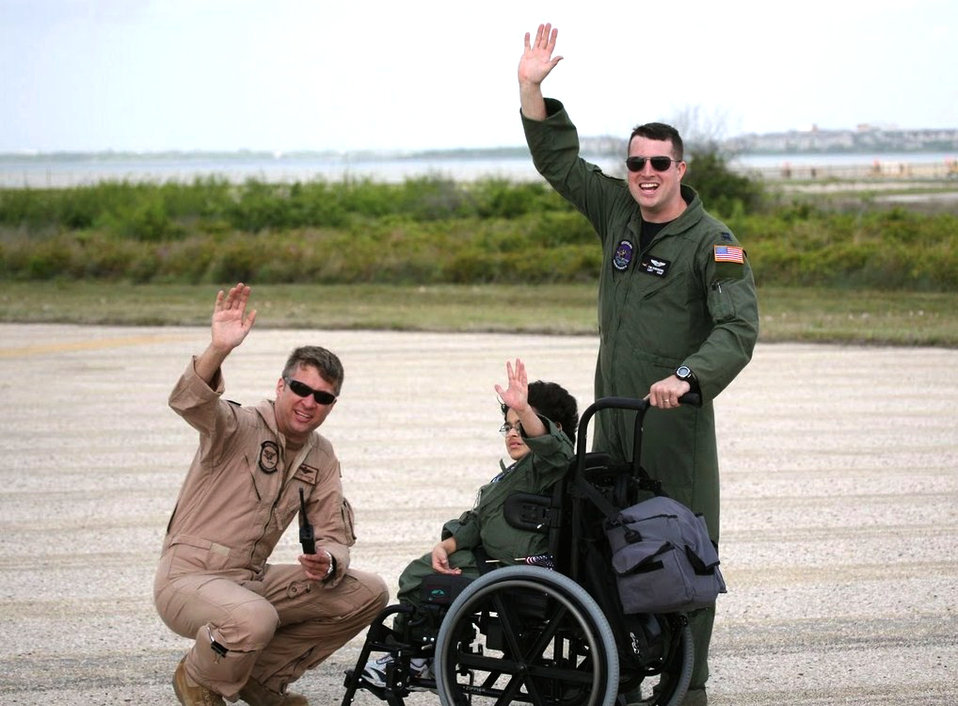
Pilot for a Day at Barksdale AFB

Navy Lt. Josh Lostetter, Pilot for a Day Eric Davis and Capt. Tim Robinson wave at a passing B-52 Stratofortress as it flies over the runway May 1, 2010, at Naval Air Station Corpus Christi, Texas. When scheduling allows, 2nd Bomb Wing members use the missions to practice off-station low approaches while providing support for the Pilot-For-A-Day program.